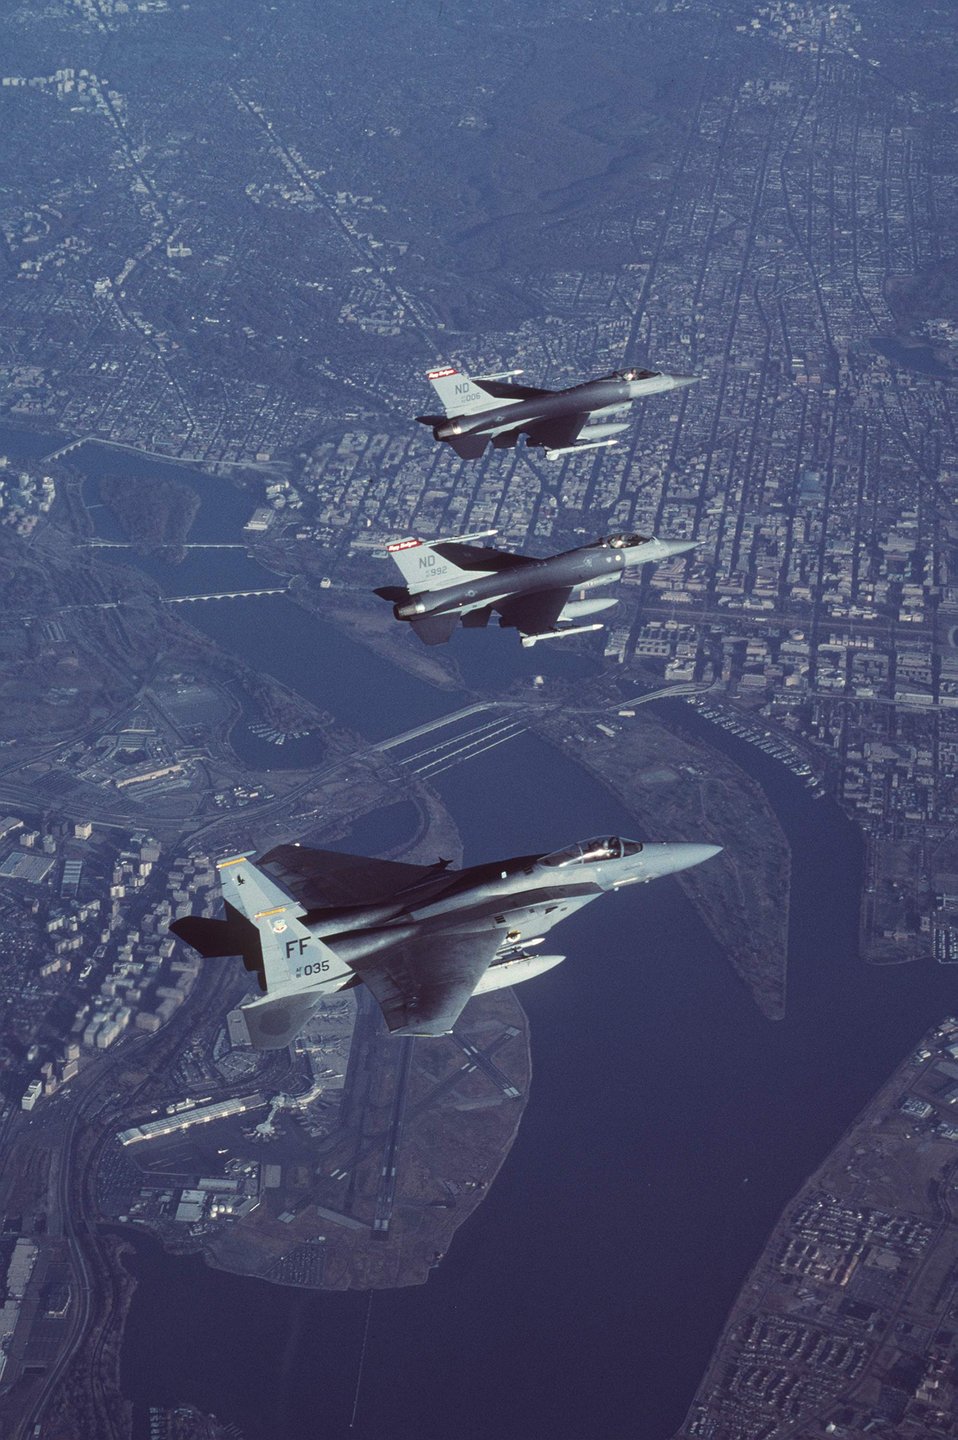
F-16A Fighting Falcons

Two Air-Defense Fighter F-16A Fighting Falcons from the North Dakota Air National Guard’s 178th Fighter Squadron lead an F-15C Eagle from the 27th Fighter Squadron at Langley Air Force Base, Va., in formation during a combat air patrol mission in support of Operation Noble Eagle. More than 11,000 airmen -- the majority Air National Guard and Air Force Reserve -- have generated more than 7,500 sorties to patrol American skies 24/7 since Sept. 11, 2001.